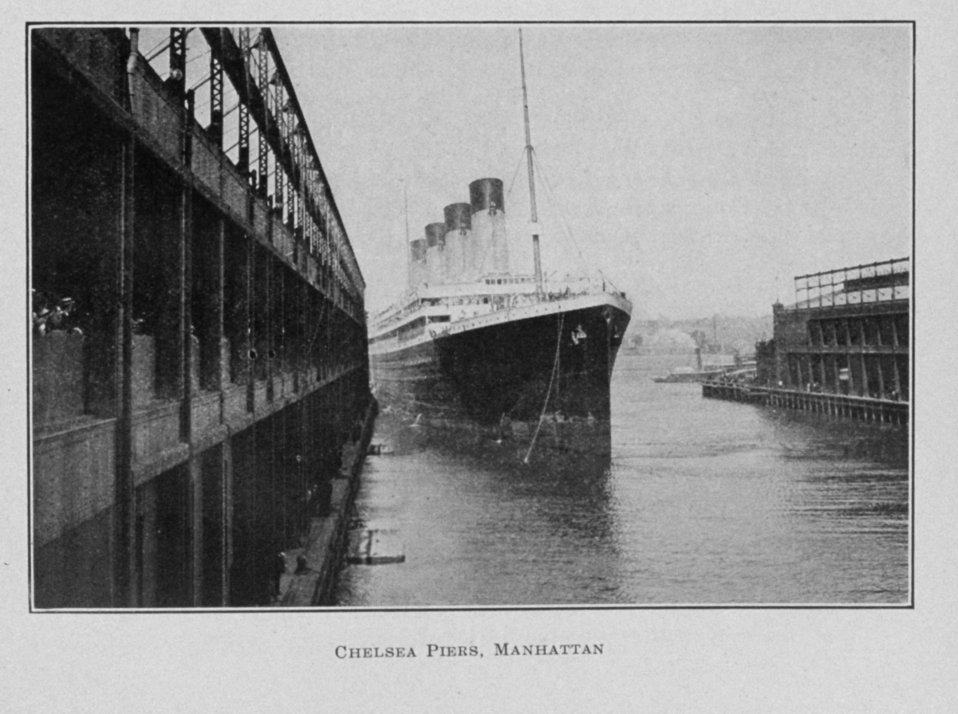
Chelsea Piers, Manhattan. This appears to be the OLYMPIC, a sister ship of the TITANIC. In: The Municipal Engineers Journal, Vol. 1, No. 5, November 1915. November 1915. Library Call No. M 1270 F 419.